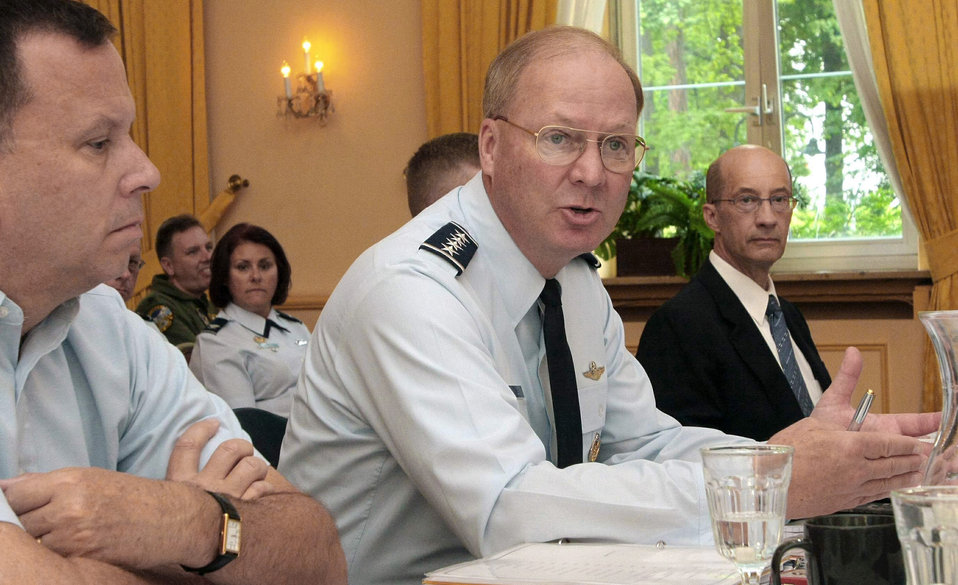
National Guard State Partnership Program

Gen. Craig R. McKinley, the chief of the National Guard Bureau, speaks at the State Partnership Program Conference in Stuttgart, Germany, June 15, saying the program